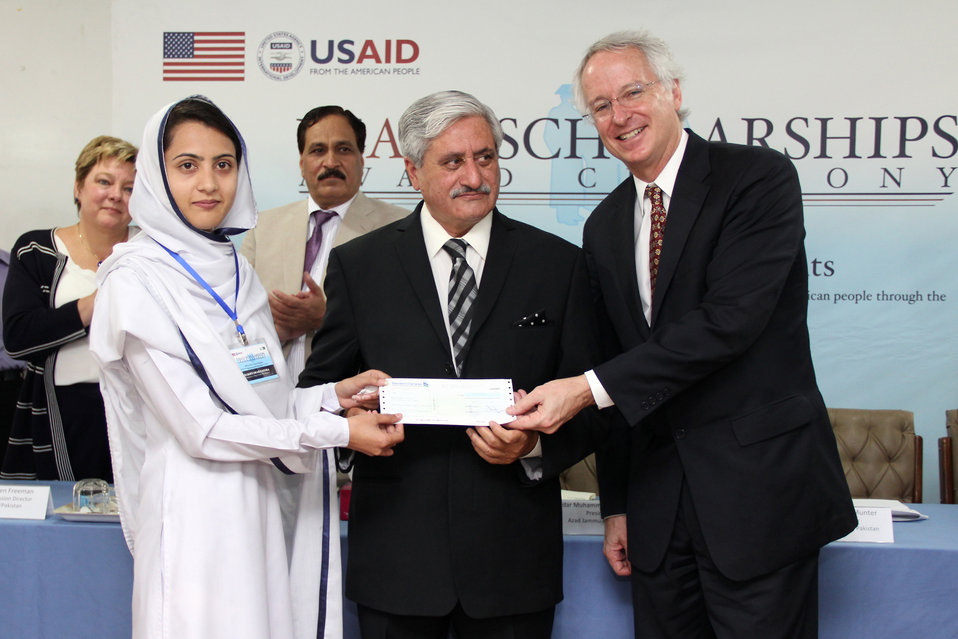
Scholarship distribution ceremony

ADE student receiving scholarship from the Ambassador